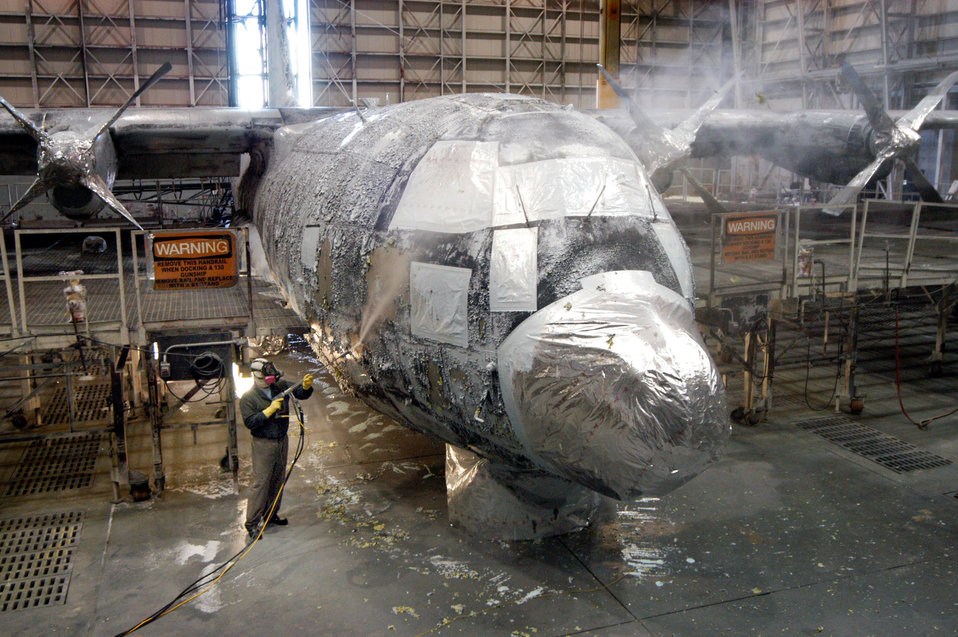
Out with the old

ROBINS AIR FORCE BASE, Ga. -- Ward Stephens uses an aquamiser to pressure wash the old paint off of a C-130 Hercules. The aquamiser, used with environment-friendly paint removers, reduces chemical use by about 50 percent. Mr. Stephens is a painter in the Warner Robins Air Logistics Center's maintenance directorate here.